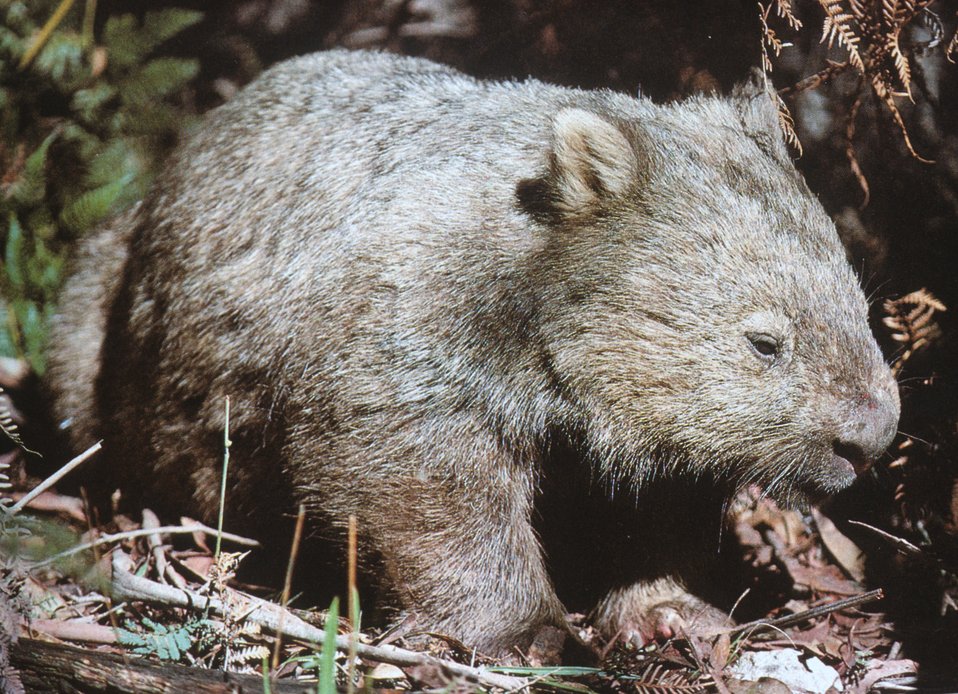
Wombat.